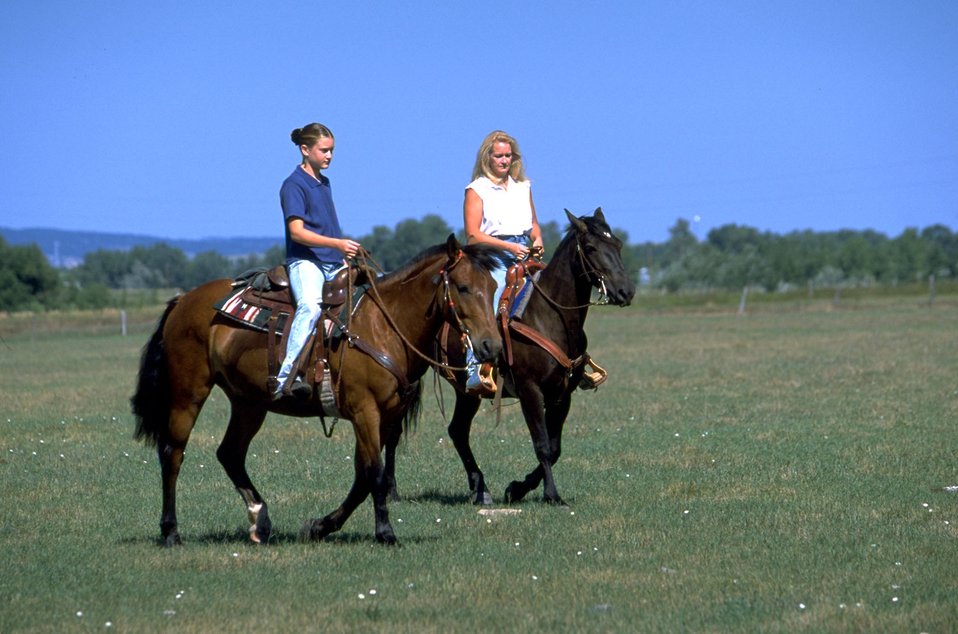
Trail Rding adopted Horses